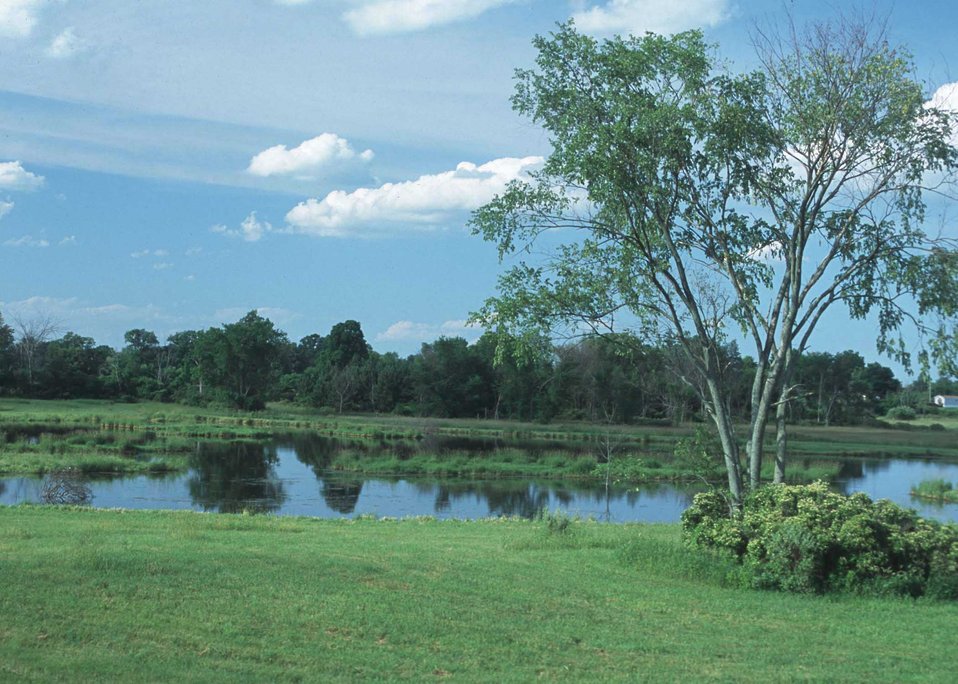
Scenic open water wetland with grass and tree in foreground, Montcalm County, Michigan.